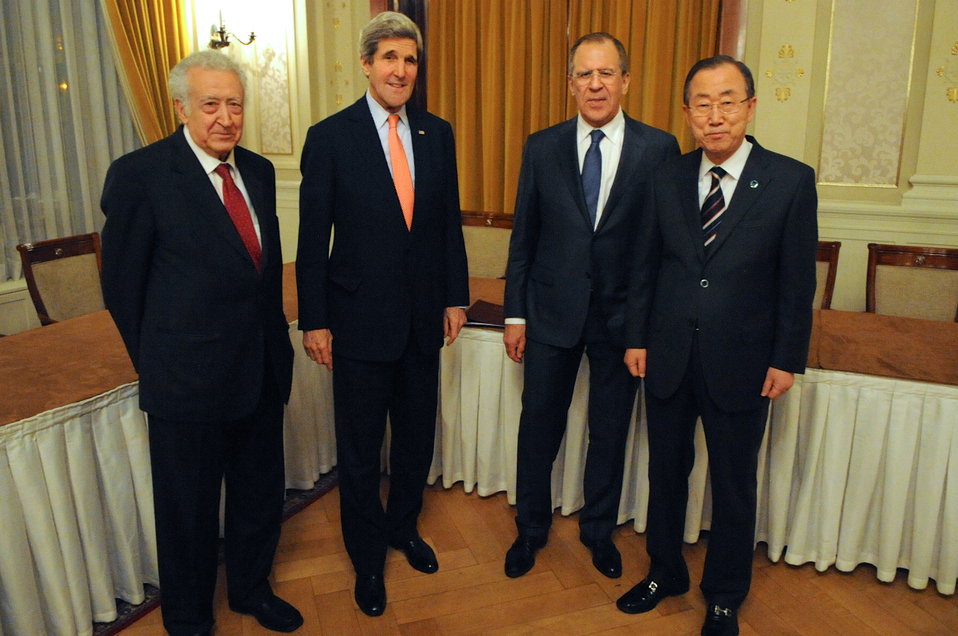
Secretary Kerry, Russian Foreign Minister Lavrov Meet With UN Secretary-General Ban, UN Special Representative Brahimi

U.S. Secretary of State John Kerry and Russian Foreign Minister Sergey Lavrov pose with United Nations Secretary-General Ban Ki-moon and U.N. Special Representative for Syria Lakhdar Brahimi on January 21, 2014, in Montreux, Switzerland, before the start of talks focused on reaching a negotiated political settlement in Syria.